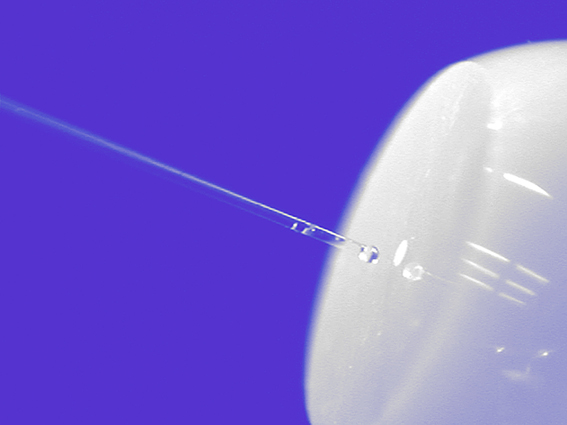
Micro Holes

NIST researchers and collaborators have developed a new method for measuring the interior dimensions of small holes with an uncertainty of only 35 nanometers. Here, a glass probe is inserted into an optical 'ferrule,' a device for connecting optical fibers used in communications systems.